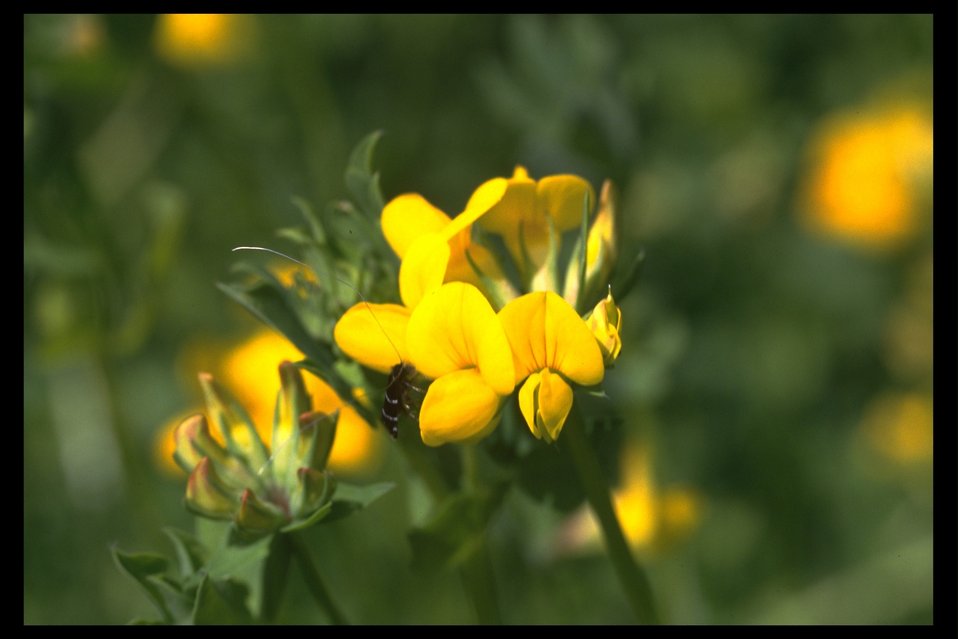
Close up of Birdfoot Trefoil (Lotus corniculatus) along the roadside near Lost Creek Lake.